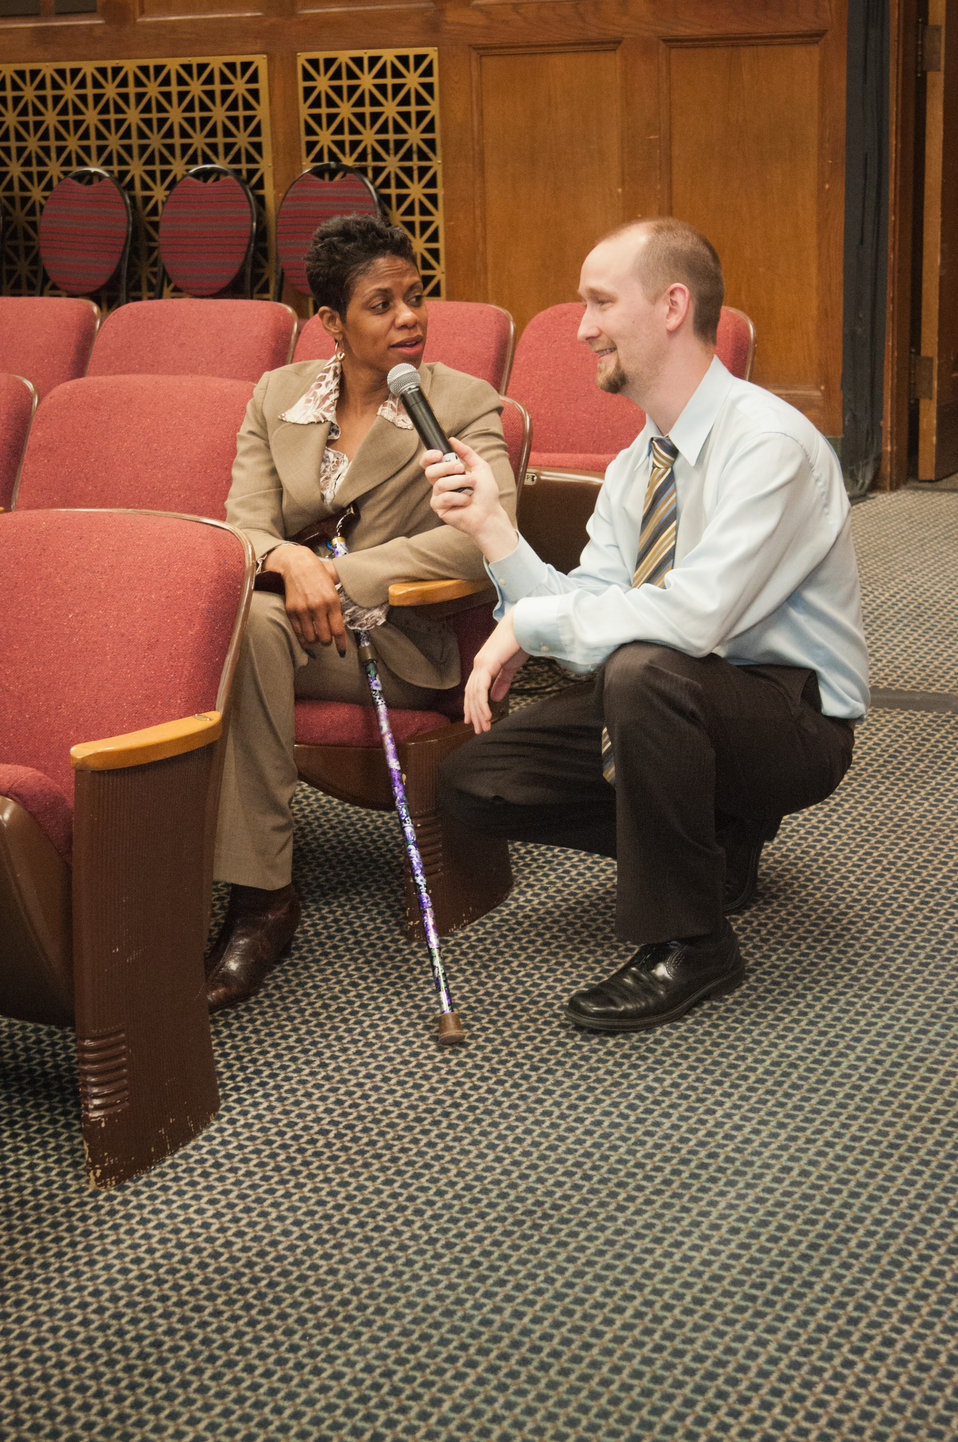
U.S. Department of Agriculture (USDA) TARGET Center Director D’Ann Clayton listens to a question posed by Office of Personnel Management (OPM) Diversity and Inclusion Program Manager Michael Murray during the USDA’s Office of Human Resources Management (OHRM) Disability Employment Program Team Training at USDA in Washington, D.C. on Tuesday, May 14, 2013. The USDA Target Center oversees the operations of USDA’s Accessible Technology and Resources Program.